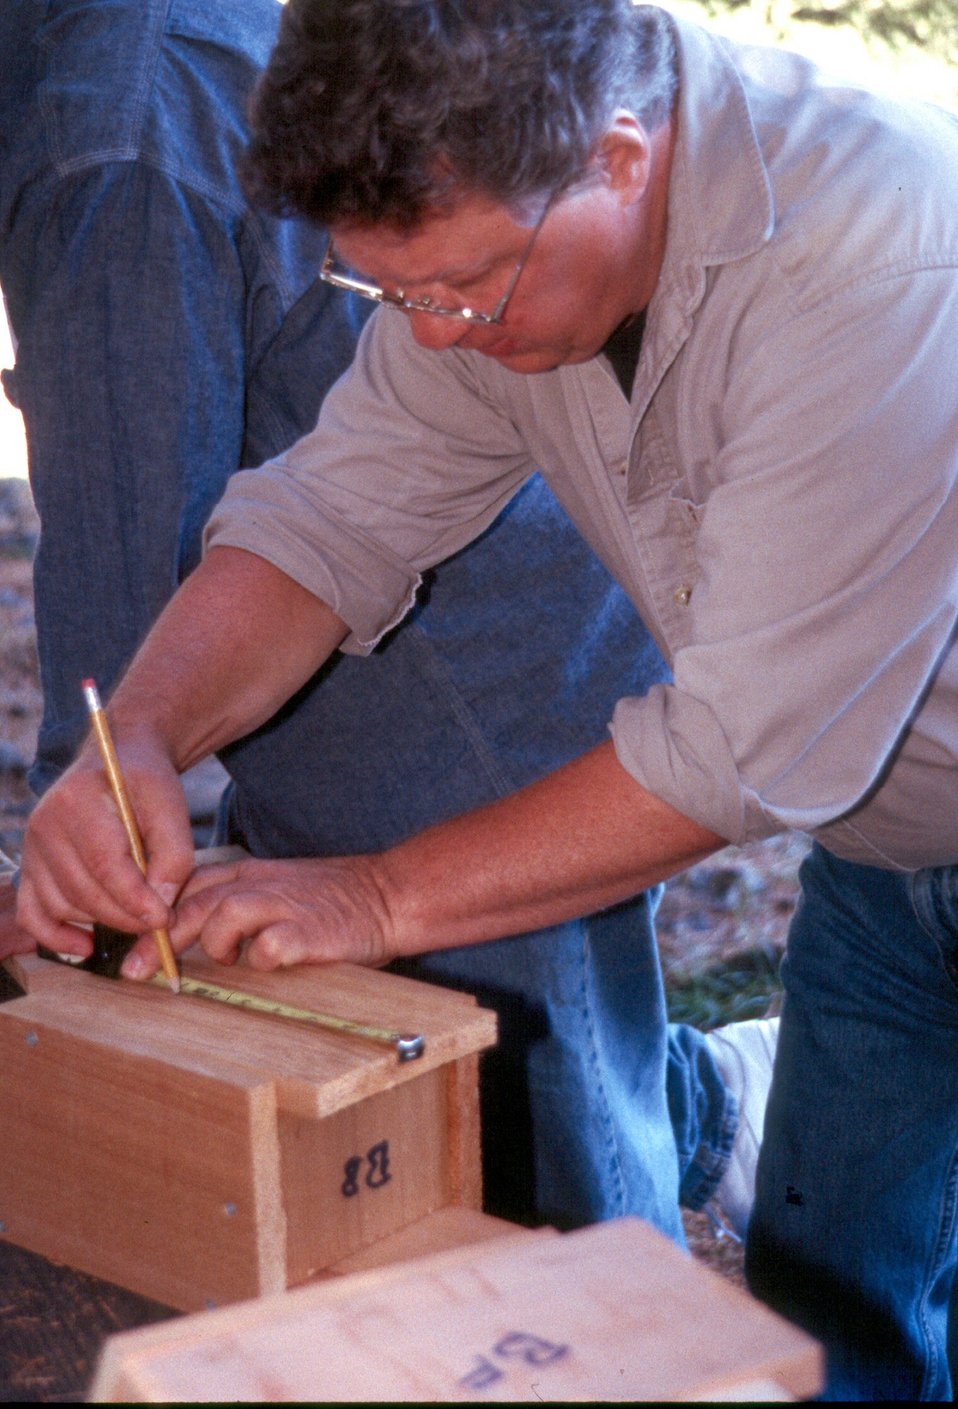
BLM employee Chuck Vostal takes measurement of a bird box